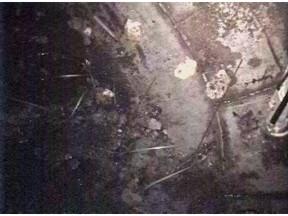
Hanford tank cleanup activities

Photo of EM cleanup activities within tank C-202 at Hanford, WA.